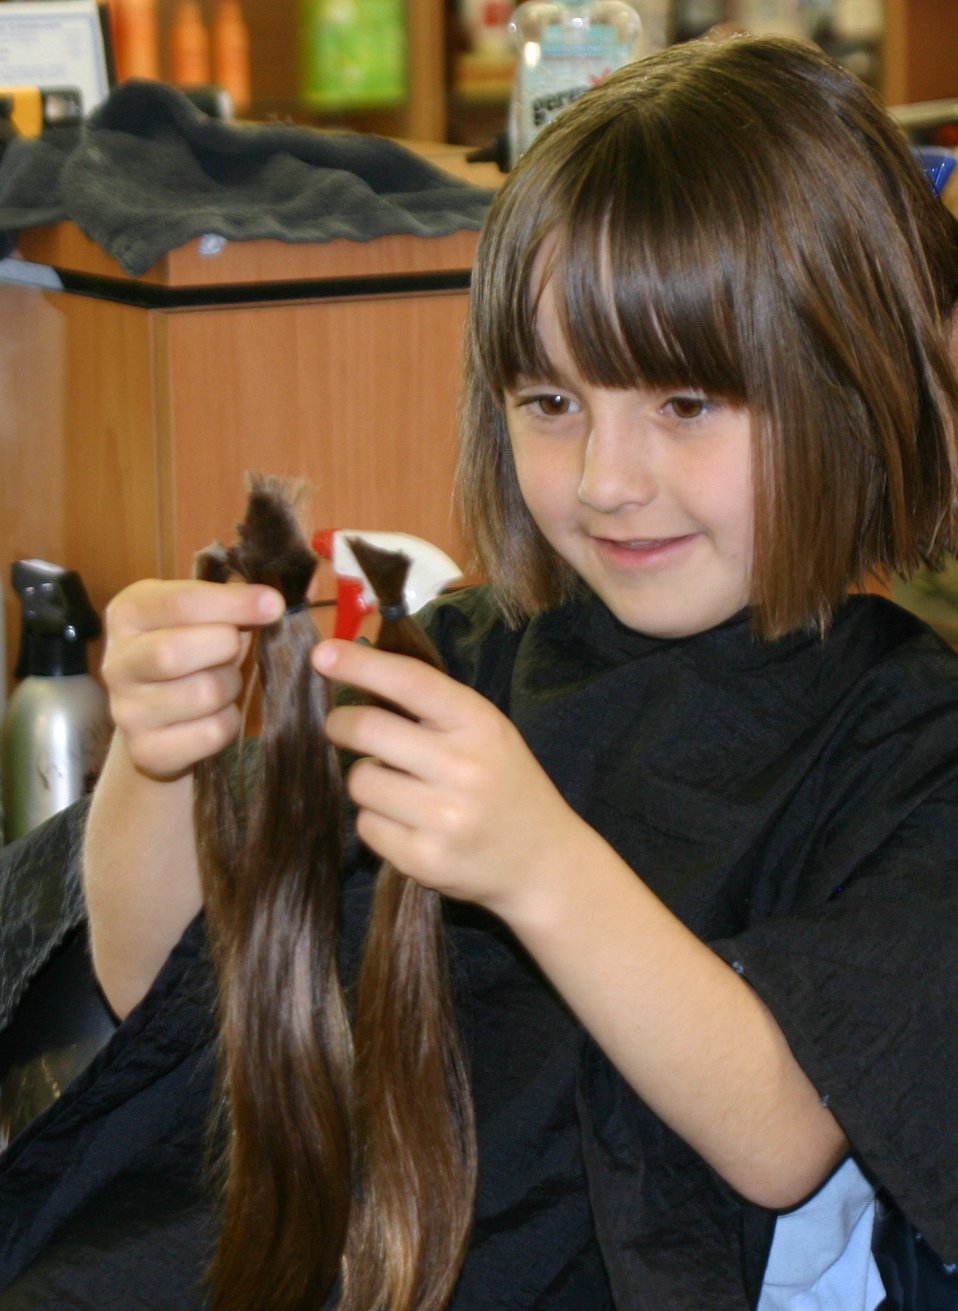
Sheppard girl donates hair to national organization for the second time

SHEPPARD AIR FORCE BASE, Texas -- Adriana Breuer examines the 11-inch locks she had cut off here March 29. While most 7-year-old girls are concentrating on the latest doll or toy, Adriana is sending her hair to Locks of Love, an organization that provides hairpieces to children with long term hair loss. She is the daughter of Master Sgts. Rodney and Lisa Breuer.